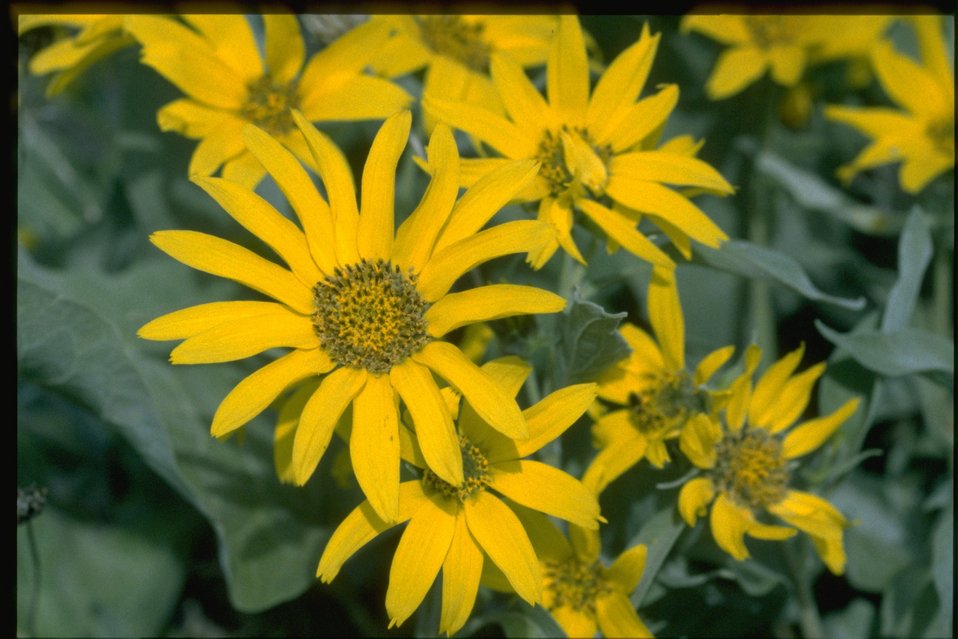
Closeup shot of Arrowleaf Balsam Root (Balsamorhiza sagittata).